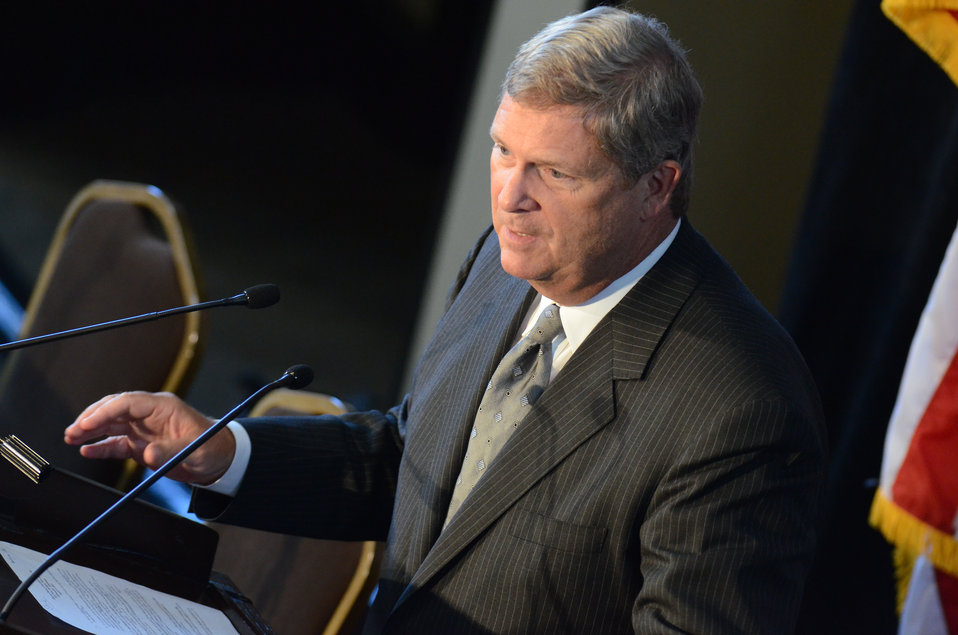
Agriculture Secretary Tom Vilsack speaks at the National Export Initiative (NEI) Small Business Tour in Milwaukee, WI, on Wednesday, August 3, 2011. An important goal of the NEI is to provide additional assistance to small and medium-sized businesses, which are major drivers of job creation. The NEI is assisting small and medium-sized businesses win more foreign government contracts, find buyers worldwide, participate in more trade missions and trade shows, receive more export financing, and learn new ways to sell products and services overseas.